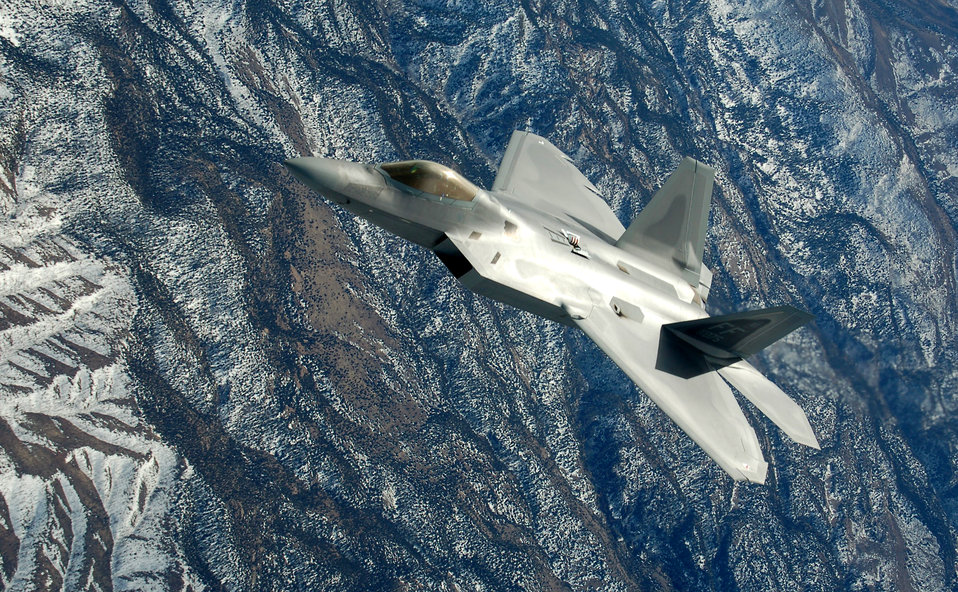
Raptors invade Nevada

An F-22 Raptor flies off after being refueled by a KC-135 Stratotanker during the Red Flag exercise Feb 7 at Nellis Air Force Base, Nev. The two KC-135 Stratotankers from the 319th Air Refueling Wing at Grand Forks Air Force Base, N.D., make up the lead tanker unit during the exercise. Red Flag is an exercise designed to hone the warfighting skills of Air Force pilots for conflicts.